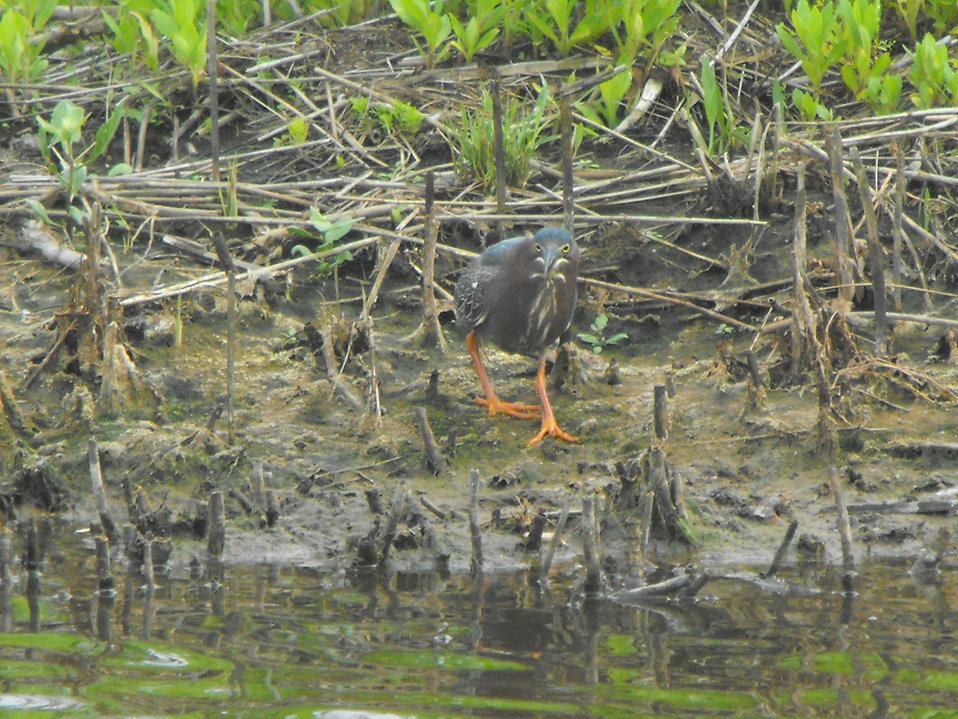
Green heron

A green heron on the Wildlife Loop at Chincoteague National Wildlife Refuge.